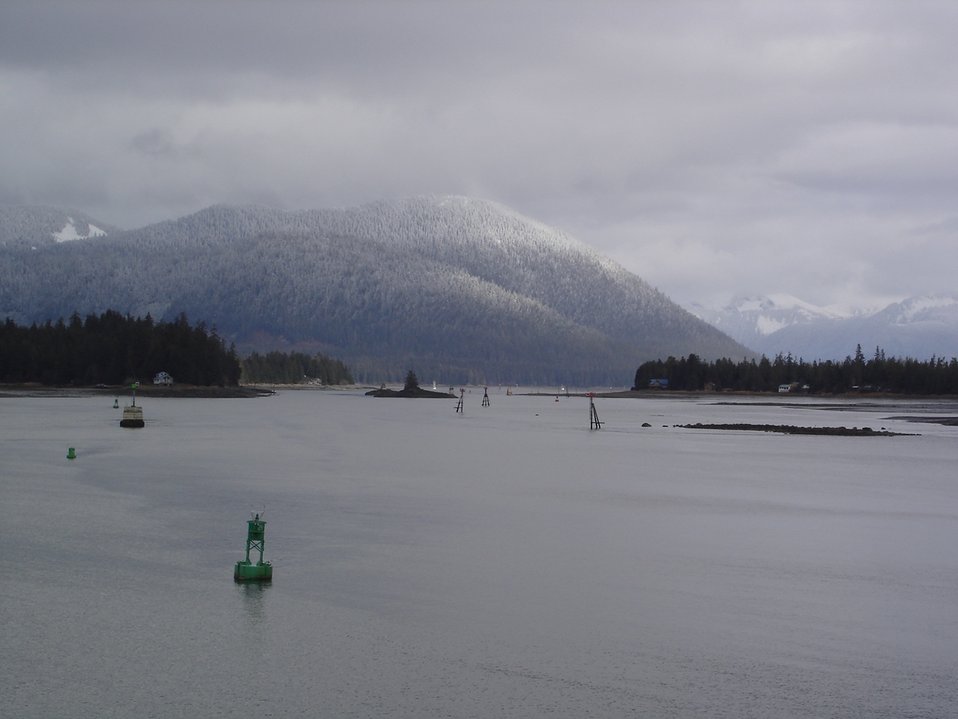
A scene along the Inside Passage seen from the NOAA Ship RAINIER.